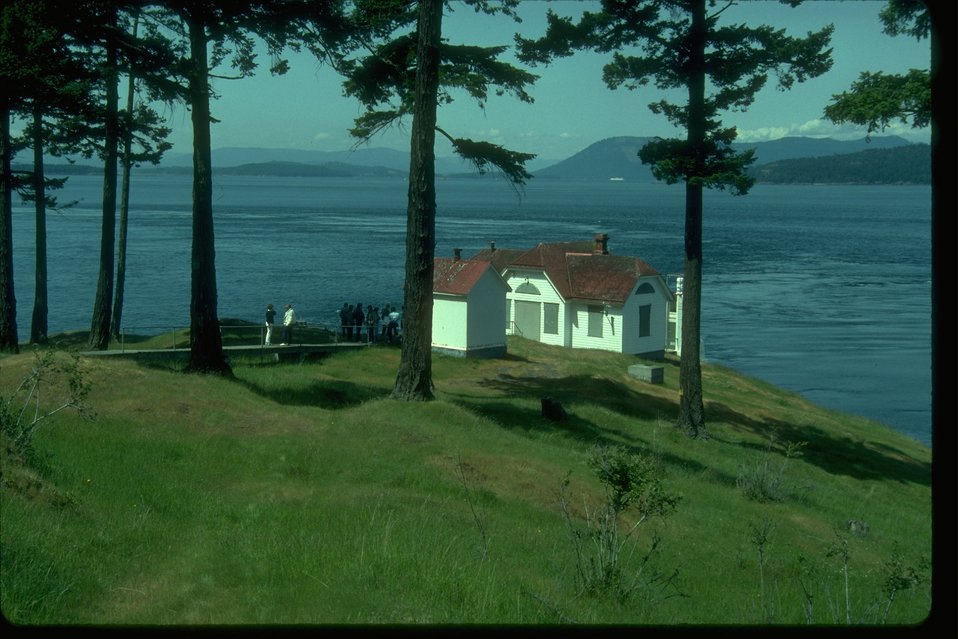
Historic Turn Point light station in San Juan County, Washington.